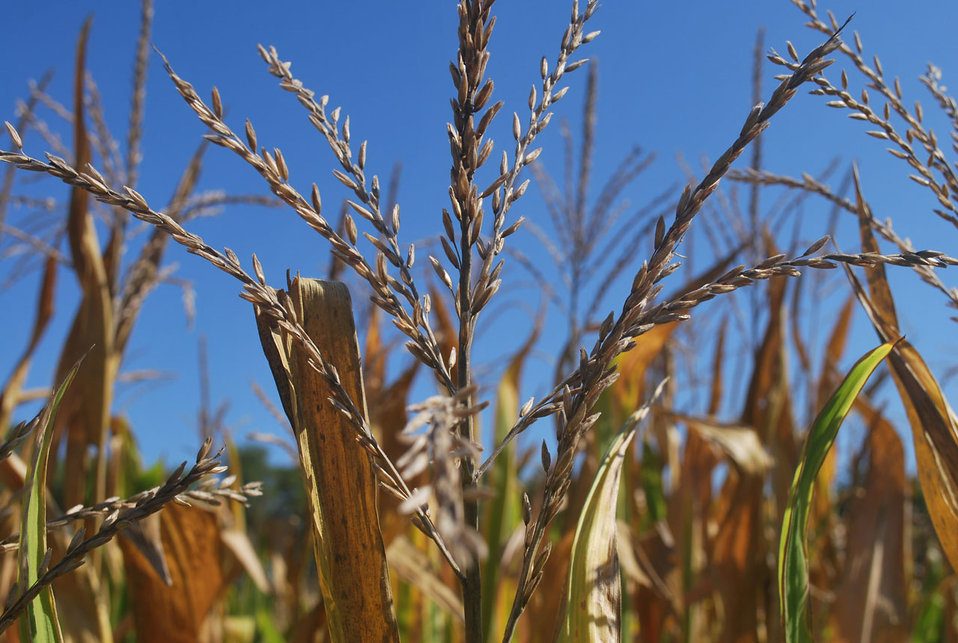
Corn tassels in a field.